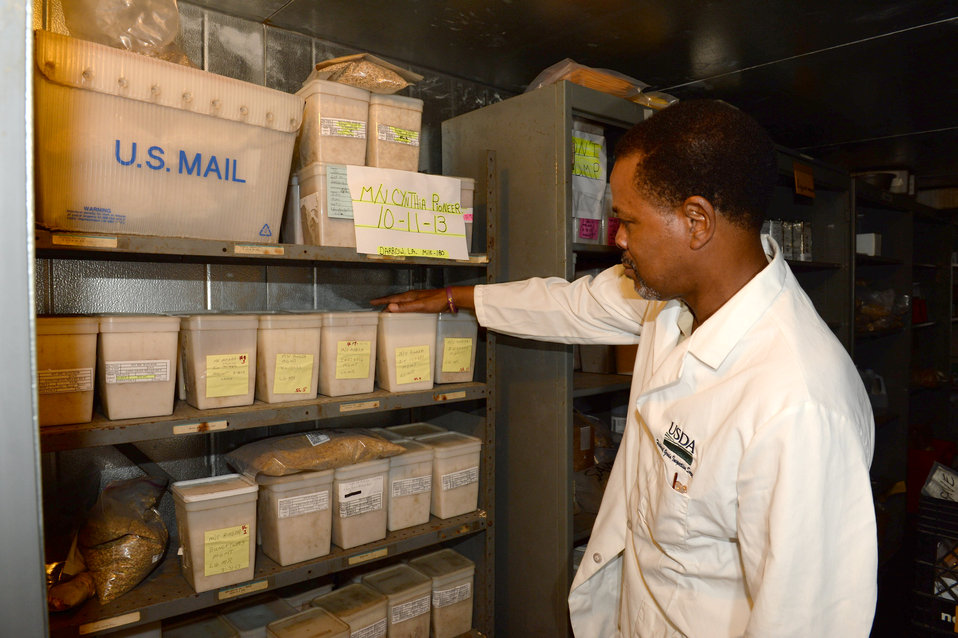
U.S. Department of Agriculture (USDA) Grain Inspection, Packers and Stockyards Administration (GIPSA) Federal Grain Inspection Service (FGIS) employee examine grain samples stored at the FGIS inspection laboratory in New Orleans, LA on Monday, Nov. 18, 2013.